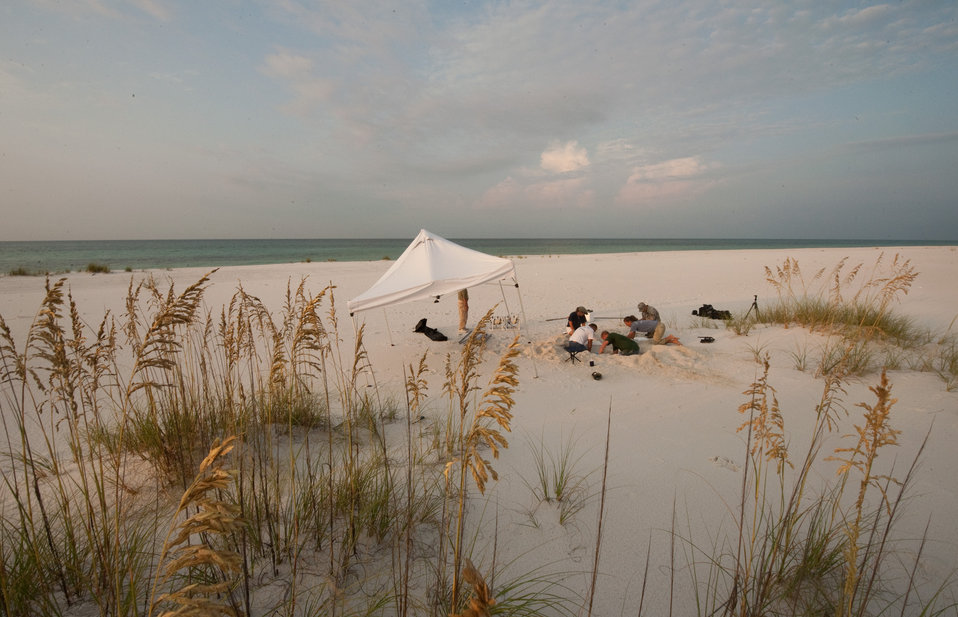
Turtle Eggs avoid Gulf Oil Danger

Sunrises as biologists at Eglin Air Force Base, Fla., begin packing two coolers with Loggerhead sea turtle eggs on August 9, 2010. Every egg gets a gentle slow-motion lift from their beach nest. Because of the critical attachment of the embryo to the inside of the eggshell, the eggs must be gently lifted with out tilting or rotating, the egg. With extreme care the transportation to the Atlantic coast is equally critical. At a controlled climate facility, they will be allowed to hatch in the cooler. Wildlife technicians will then release them into the ocean.